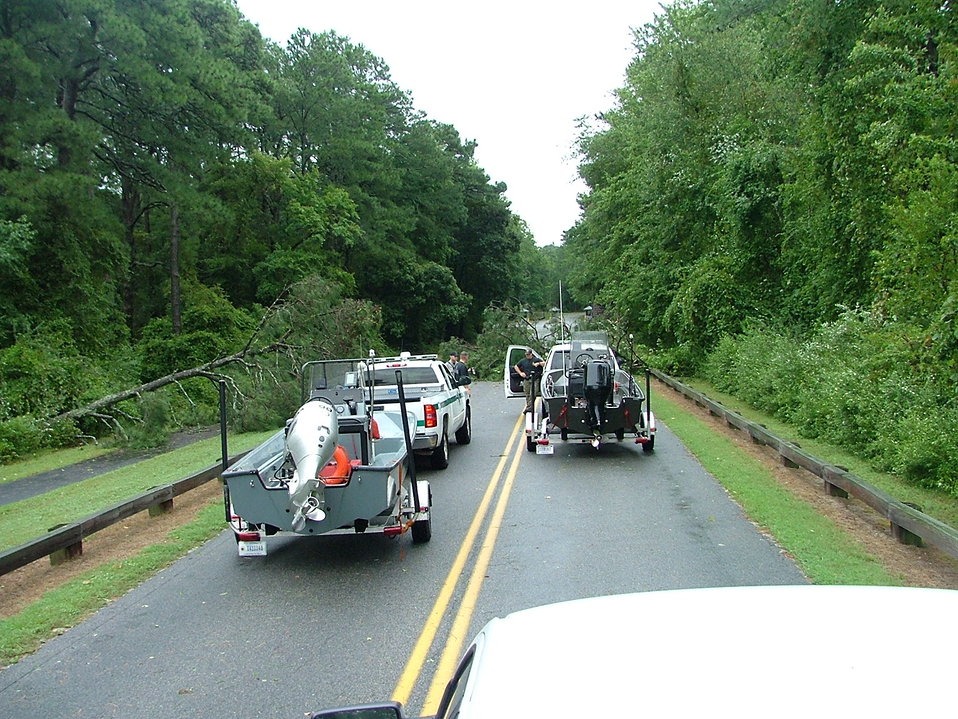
Returning to the refuge

U.S. Fish and Wildlife Service & National Park Service staff return to Chincoteague National Wildlife Refuge in Virginia and encounter fallen trees near refuge entrance after Hurricane Irene.